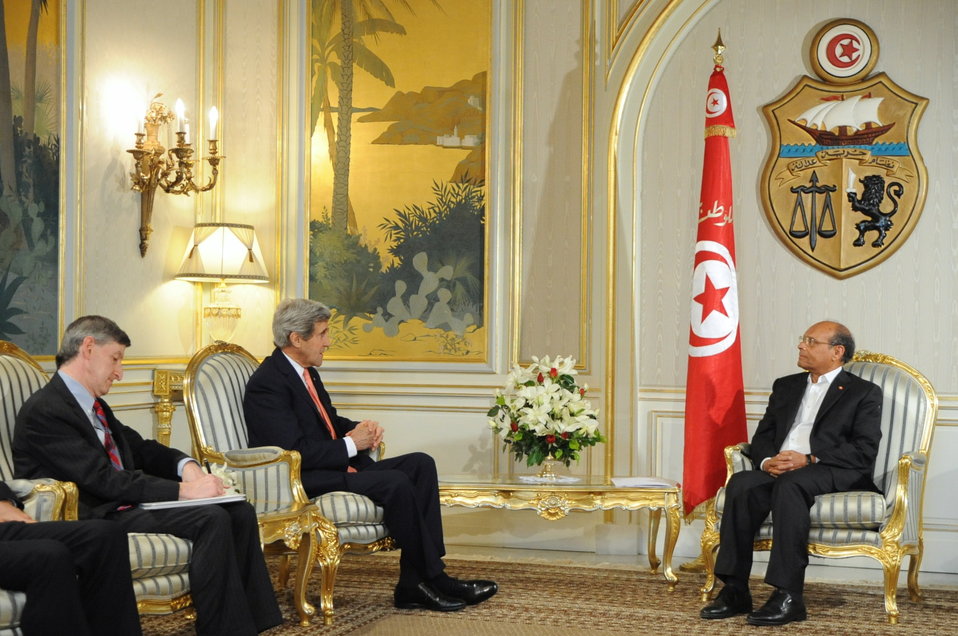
Secretary Kerry, Ambassador Walles Meet With Tunisian President Marzouki in Tunis

U.S. Secretary of State John Kerry and U.S. Ambassador to Tunisia Jacob Walles sit with Tunisian President Moncef Marzouki for a meeting at the Carthage President's Residence in Carthage, Tunisia, on February 18, 2014.